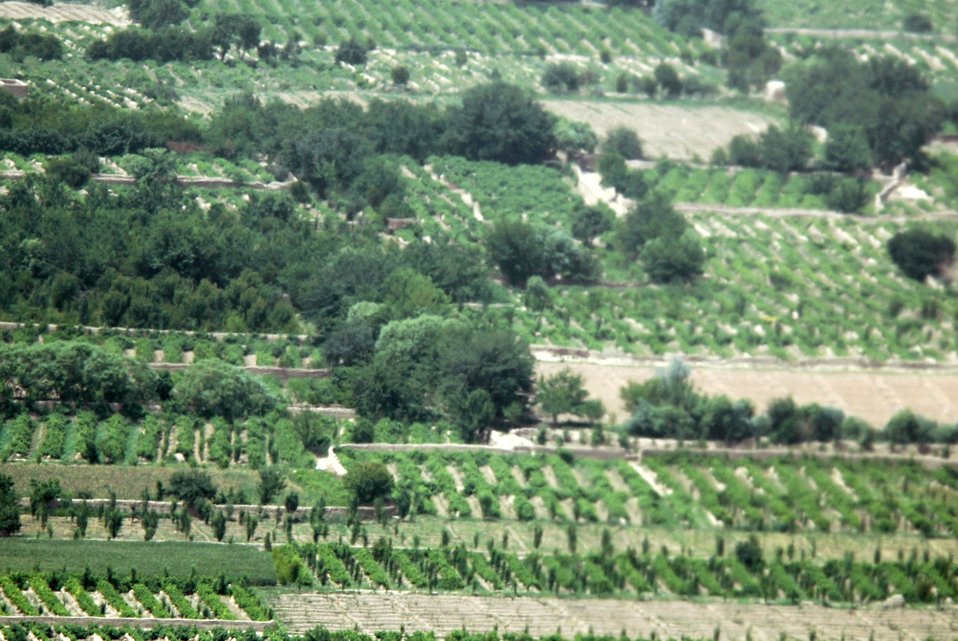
CODEL Berman